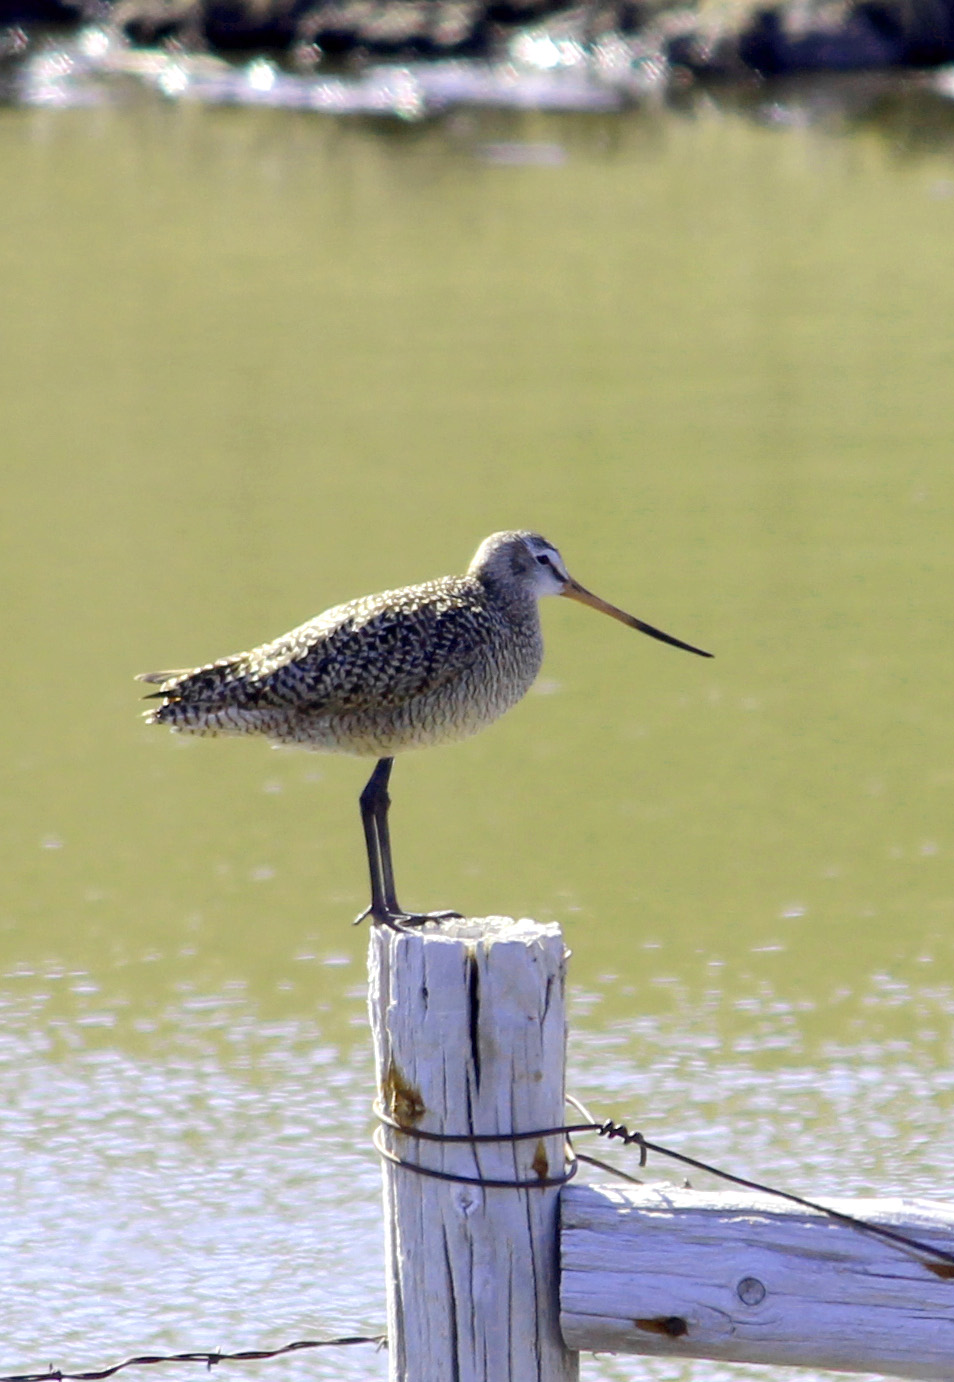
Marbled Godwit

This Marbled godwit stands on a fencepost brace on the Hille Waterfowl Production Area of the Kulm Wetland Management District in Dickey County, North Dakota.